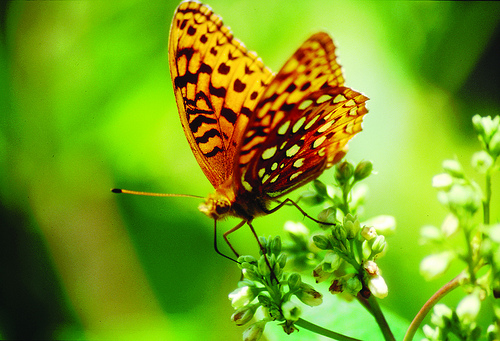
butterfly at Canaan Valley Refuge